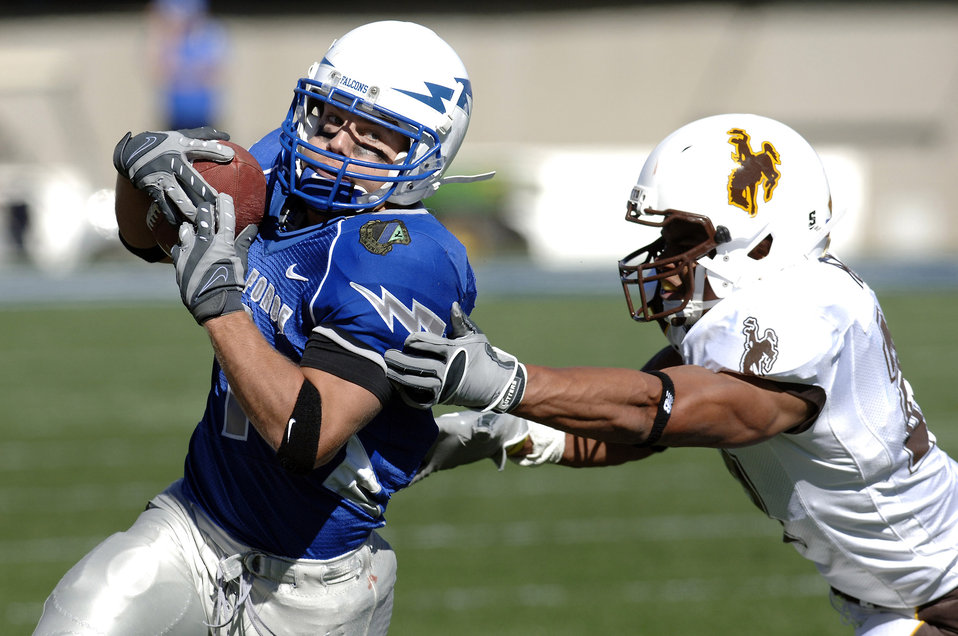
Football: Falcons bowl-eligible after win over Wyoming

U.S. Air Force Academy Falcons z-back Chad Hall eludes a Wyoming defender during Air Force's 20-12 win Oct. 20 at Falcon Stadium in Colorado. Hall rushed for a game-high 167 yards to up his career total to 1,878, the eighth highest in Academy history.